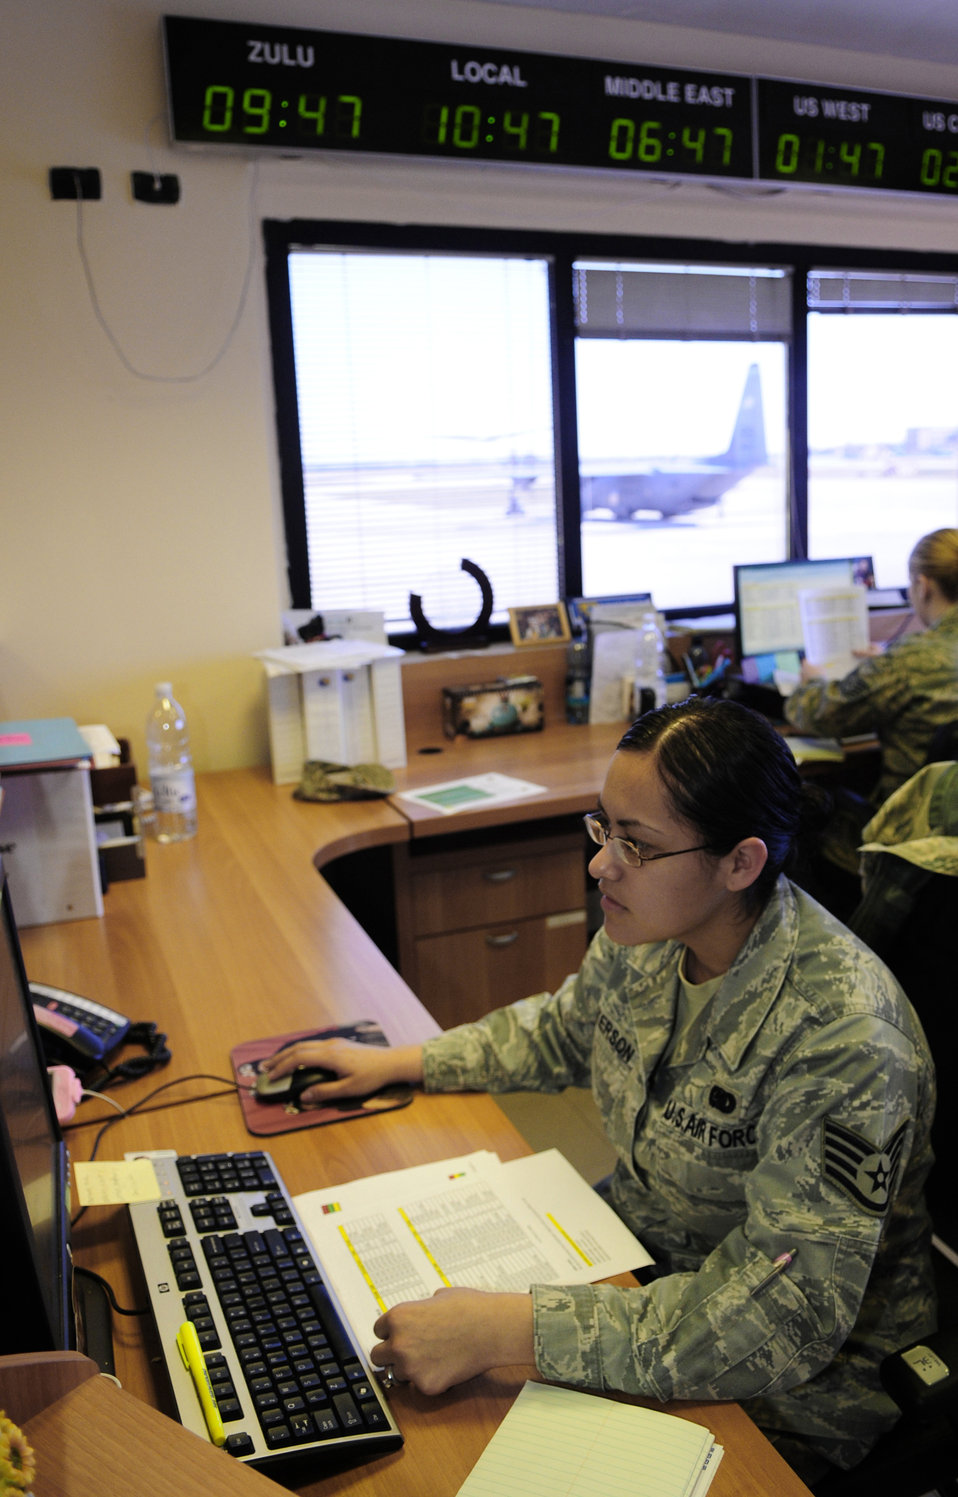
Odyssey Dawn

Staff Sgt. Katherine Dickerson, 31st Logistics Readiness Squadron logistics planner, coordinates with personnel from Royal Air Force Lakenheath, United Kingdom, and Spangdahlem Air Base, Germany, to ensure the smooth arrival of equipment and personnel arriving to Aviano Air Base, Italy, in support of Operation Odyssey Dawn March 20, 2011. Joint Task Force Odyssey Dawn is the U.S. Africa Command task force established to support the larger international response to the unrest in Libya. A broad coalition of nations are partnering to enforce U.N. Security Council Resolution (UNSCR) 1973, which authorizes all necessary means to protect civilians in Libya under threat of attack by Qadhafi regime forces. JTF Odyssey Dawn is commanded by Admiral Samuel J. Locklear, III.